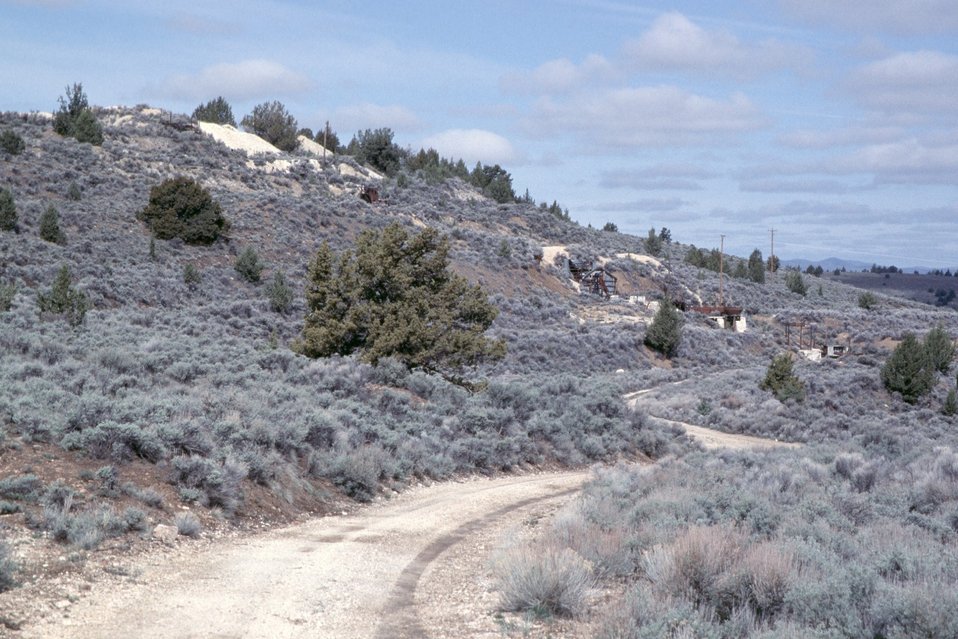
AML Glass Buttes, G5, Burns District The hillside has various levels where mercury ore was crushed into powder, the heavier powder was separated from the lighter powder, water was put into a large funnel to transport the reject powder away from the mill/retort area, and the heavier powder was heated in a retort.